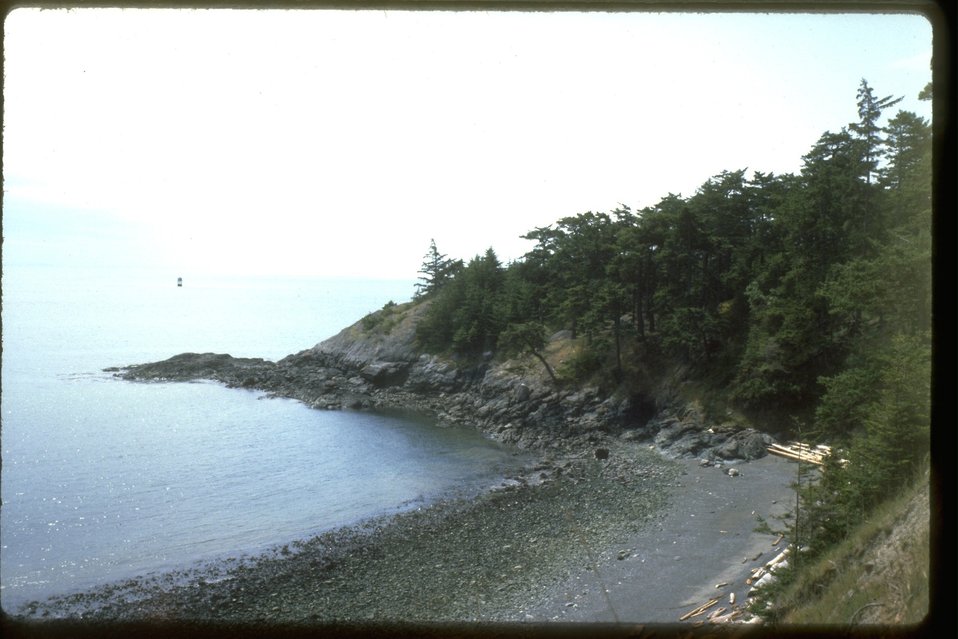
Point Colville on Lopez Island in San Juan County, Washington: Area of Critical Environmental Concern.